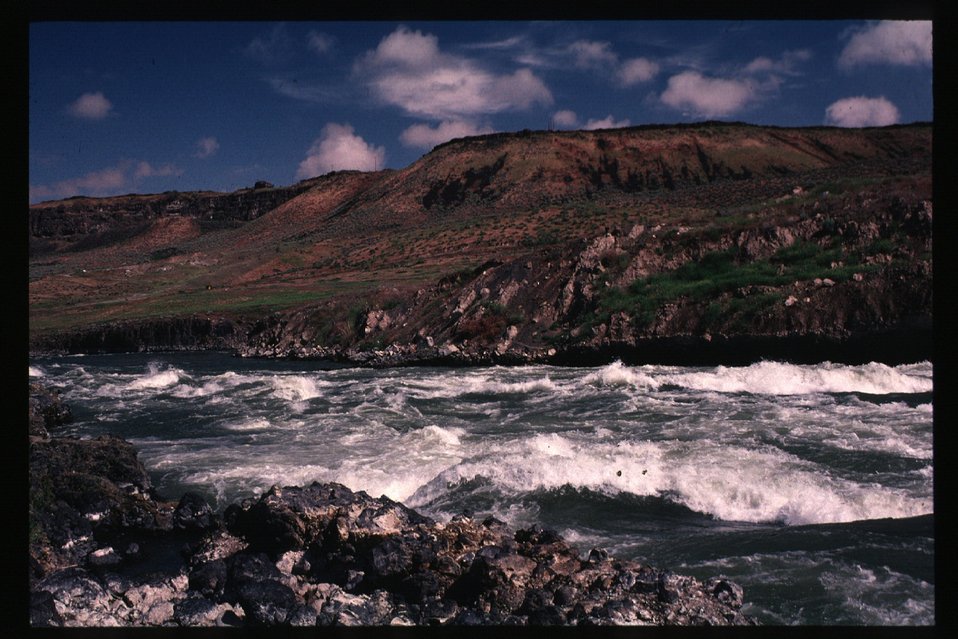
Water falls Rapids Recreation Scenic Snake River Jarbidge Field Office LSRD Lower Snake River District